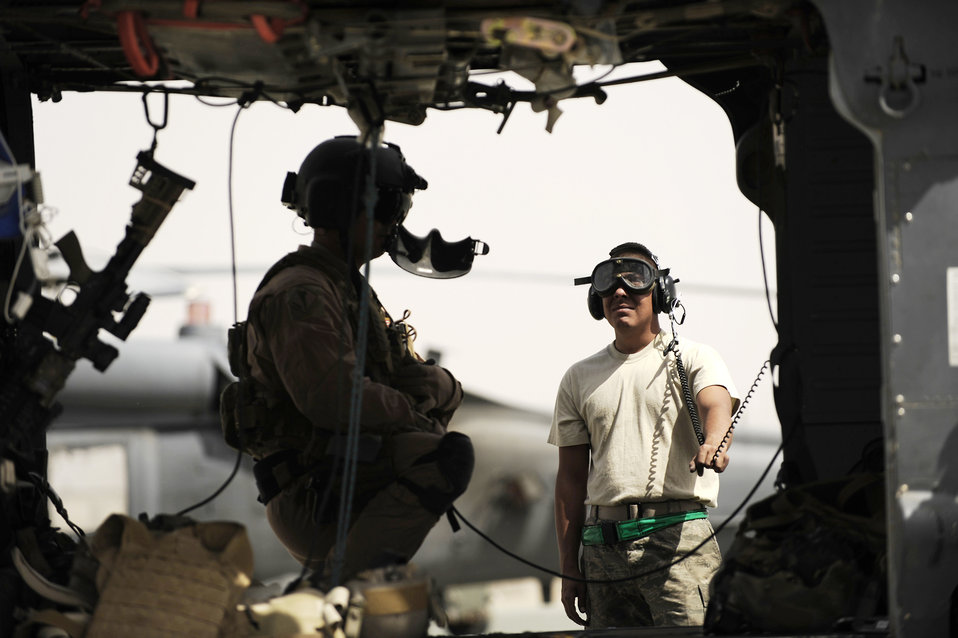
Maintenance Airmen ensure rescue missions save lives

Senior Airman Robert Fabela observes the rotors as a pilot shuts down the engines after returning from an alert mission April 16, 2010, at Camp Bastion, Afghanistan. Airman Fabela is an HH-60 Pave Hawk crew chief assigned to the 451st Expeditionary Aircraft Maintenance Squadron helicopter maintenance unit.